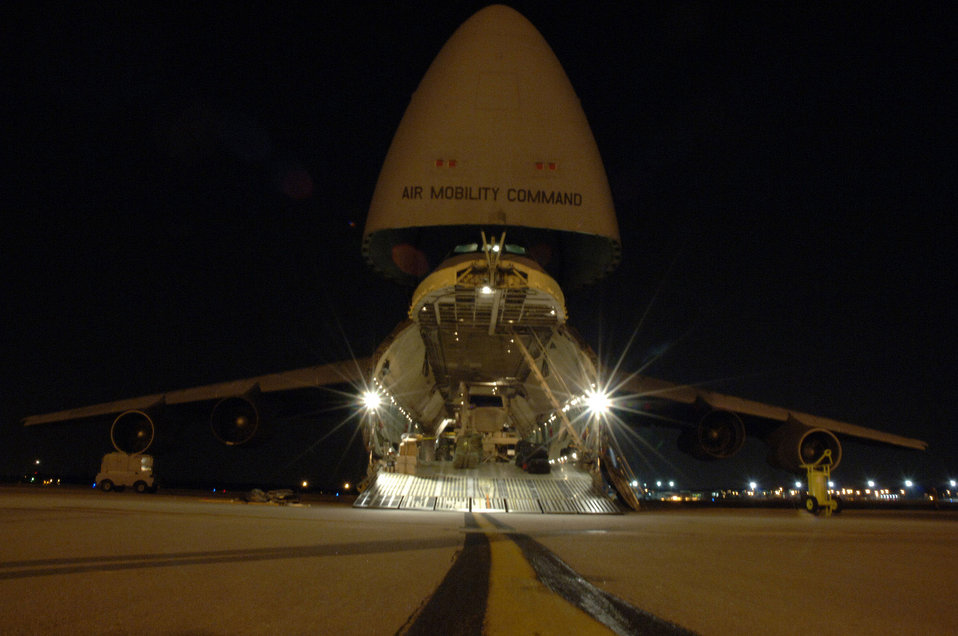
Airmen to deliver 10,000th MRAP to troops

Airmen load a mine-resistant ambush-protected vehicle onto a C-5 Galaxy Aug. 16, 2007, at Charleston Air Force Base, S.C. The C-5 is assigned to the 436th Airlift Wing Dover AFB, Del.